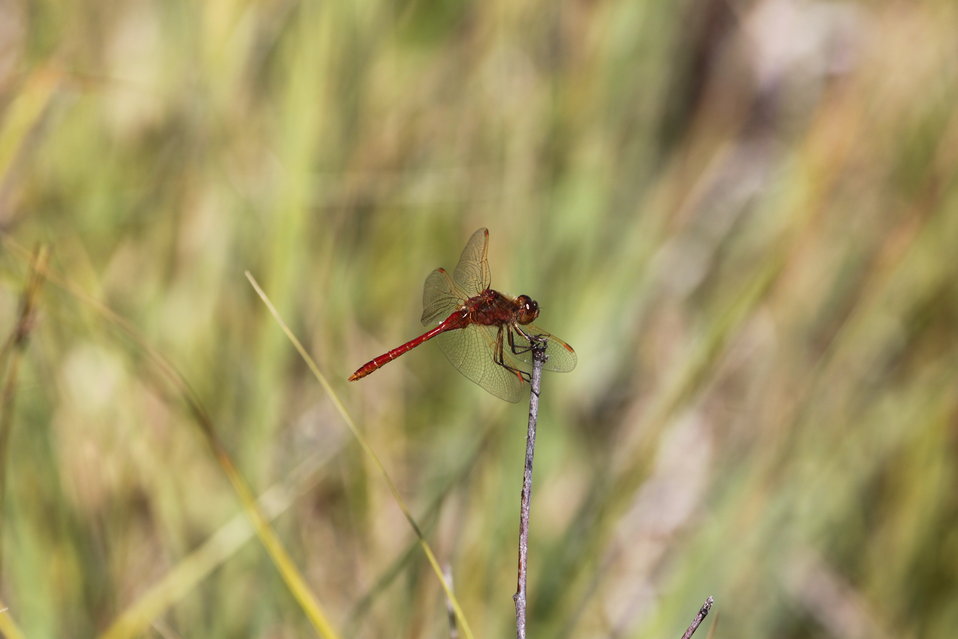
Saffron-winged Meadowhawk-14

Sympetrum costiferum is a common dragonfly (member of the Skimmer family) seen during the months of July through October.